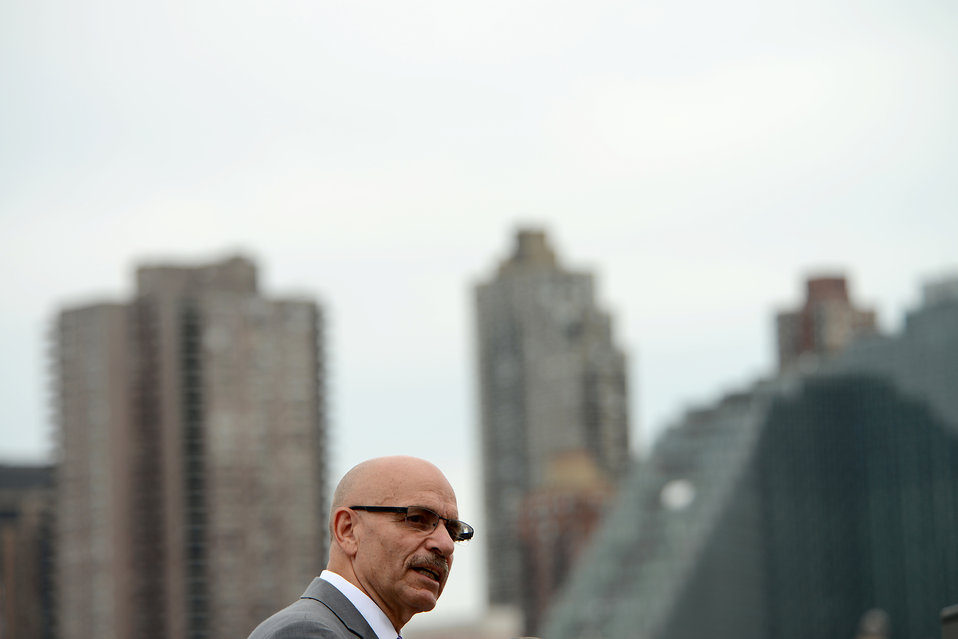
Opening ceremony

New York City Fire Commissioner Salvatore Cassano addresses the crowd during the opening ceremony of Air Force Week 2012 in New York City on Aug. 19.